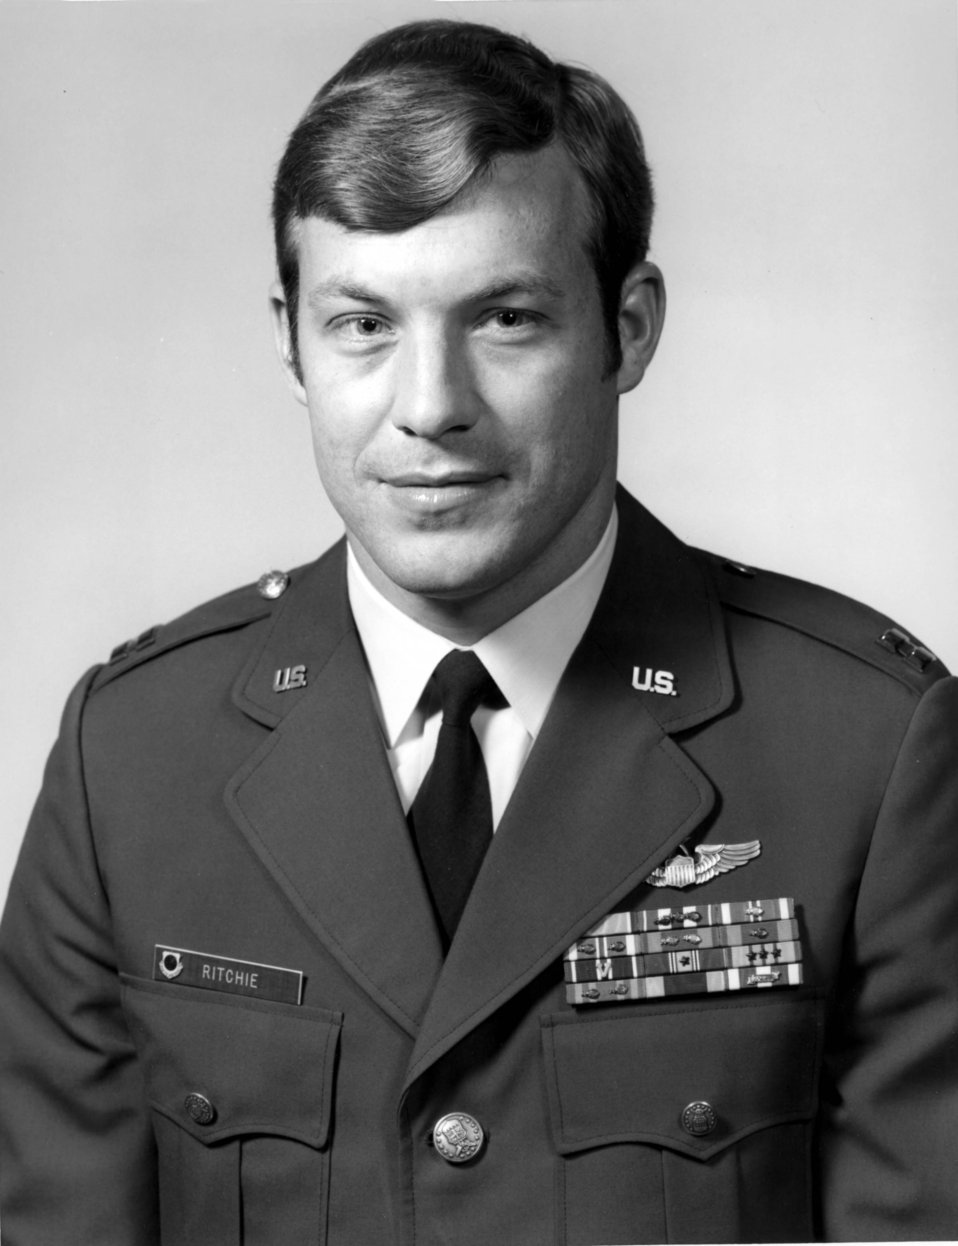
Capt. R. Steve Ritchie, the Air Force's first Ace in the Vietnam war.